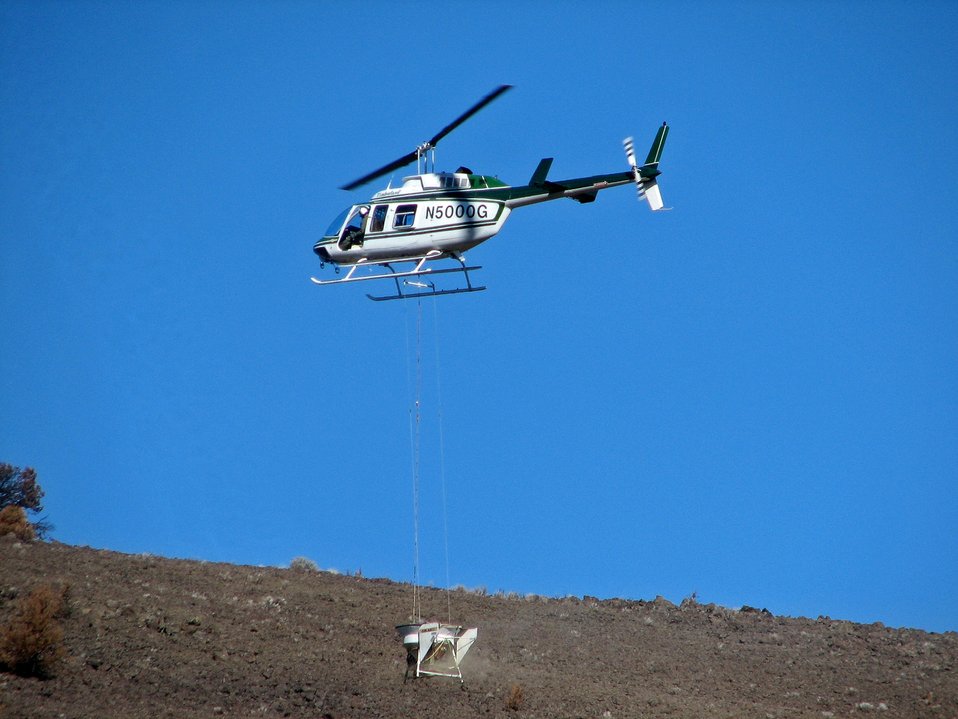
Approximately 400 acres of the Klamath Hills wildfire south of Klamath Falls were reseeded with native grasses, forbs, and shrubs.